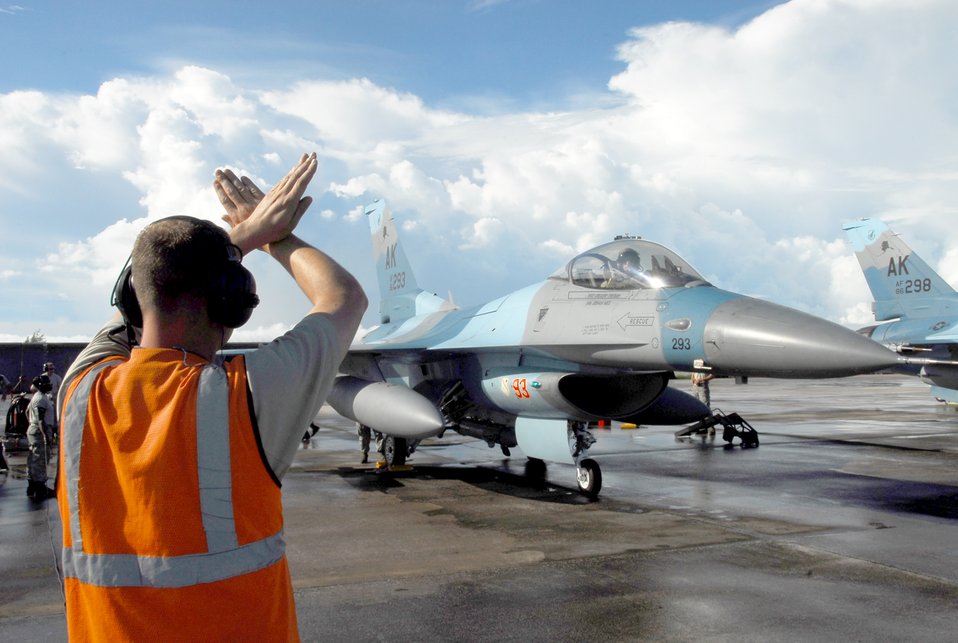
Stop!

An Airman directs an F-16 Fighting Falcon from the 18th Aggressor Squadron out of Eielson Air Force Base, Alaska, Sept. 16, 2010, at Andersen AFB, Guam. The Aggressors are in Guam to act as the opposing forces during Valiant Shield air combat exercises.